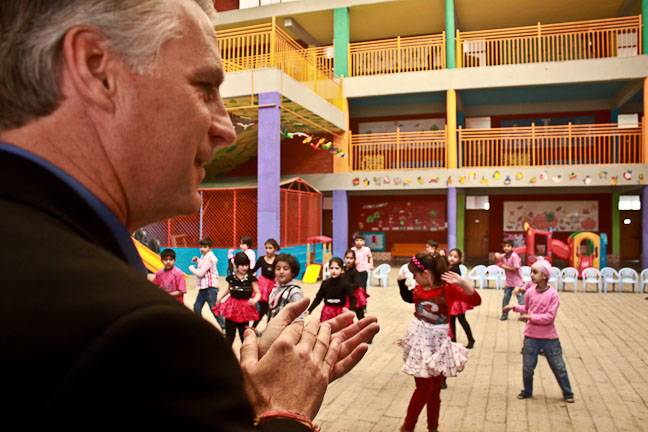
Ambassador Roemer Visits Jammu and Kashmir

U.S. Ambassador to India Timothy J. Roemer visits Jammu and Kashmir, March 17-18, 2011, to engage and listen to the people and connect with the youth of the state.